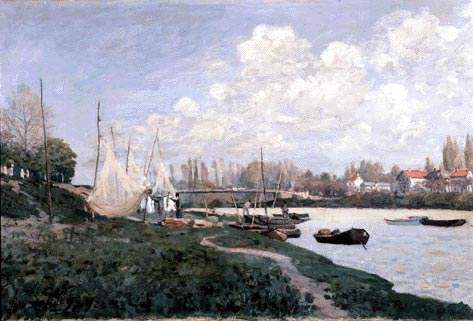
'Drying Nets', oil on canvas painting by Alfred Sisley, 1872, Kimbell Art Museum